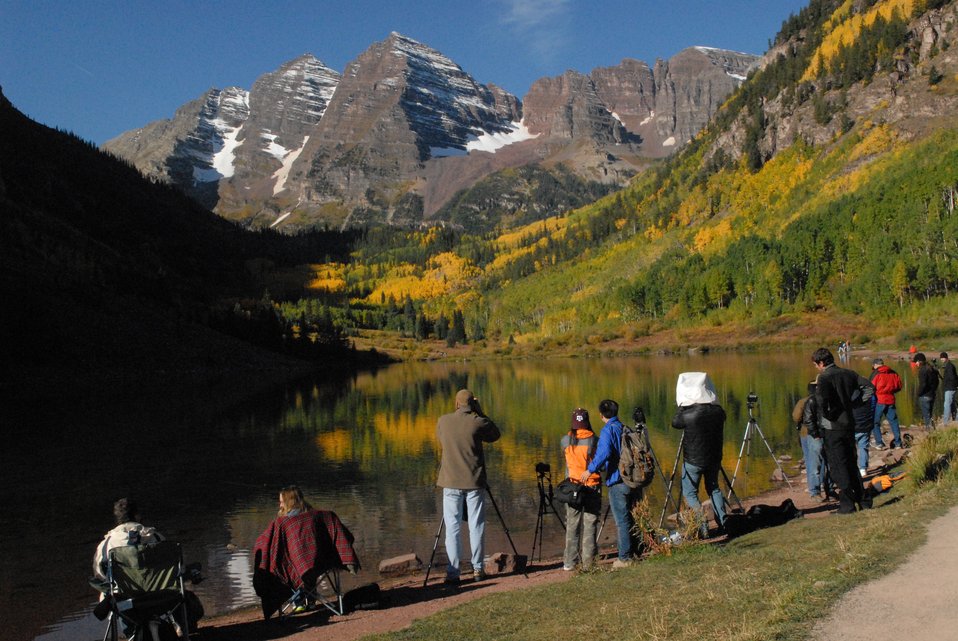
Maroon Bells, two peaks in the Elk Mountains that are less than half-mile apart, are reflected on Maroon Lake. The site is one of most photographed peaks in Colorado and among one of the most spectacular views on the White River National Forest. The area is both vision of power and peace for outdoor photographers, who line the shore of the lake.